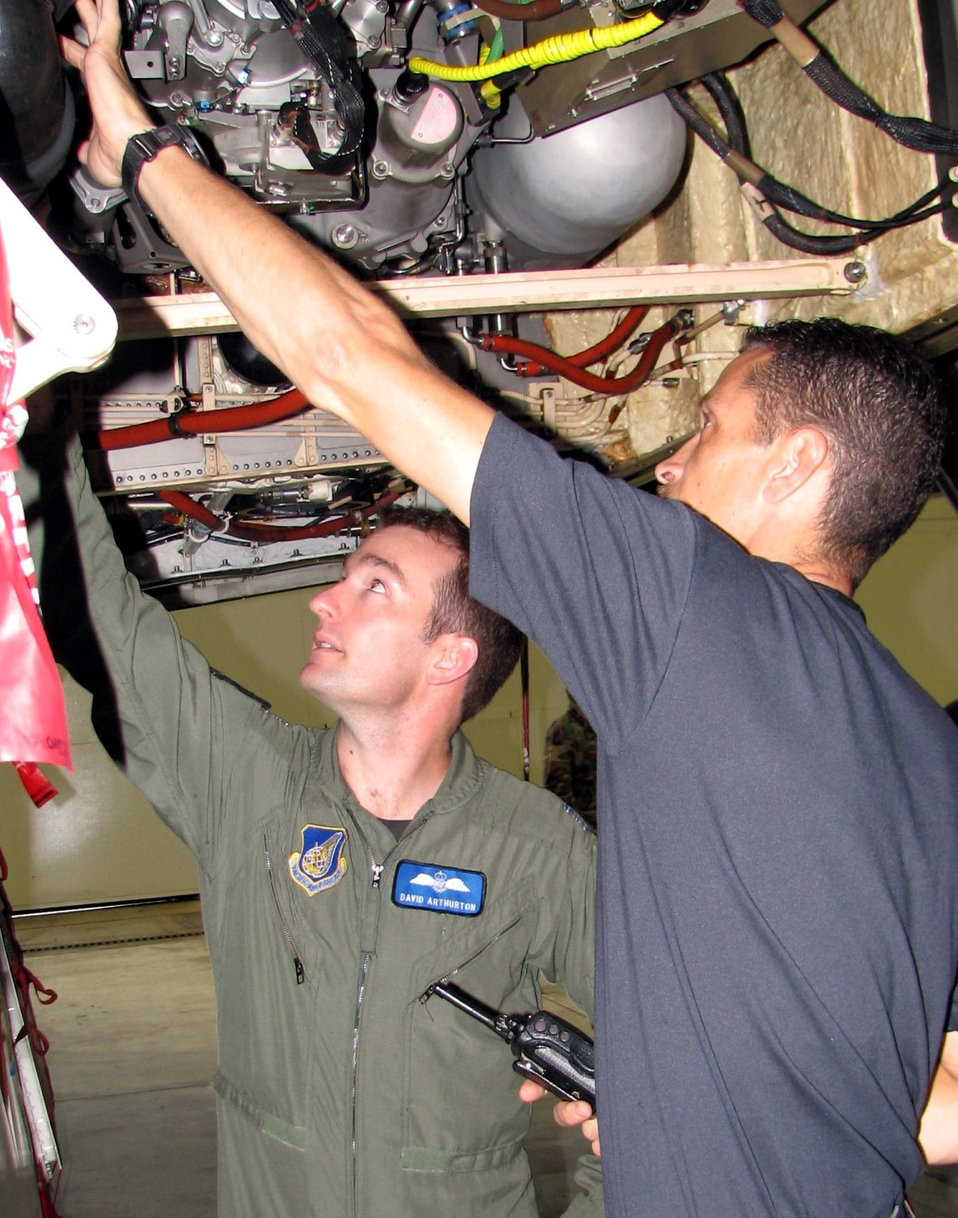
Royal Air Force pilot makes history in B-2 Spirit

Royal Air Force Squadron Leader David Arthurton (left) discusses B-2 Spirit maintenance with Master Sgt. Kelly Costa at Andersen Air Force Base, Guam, on Aug. 7. Squadron Leader Arthurton is with the 13th Expeditionary Bomb Squadron; Sergeant Costa is with the 36th Expeditionary Aircraft Maintenance Squadron.